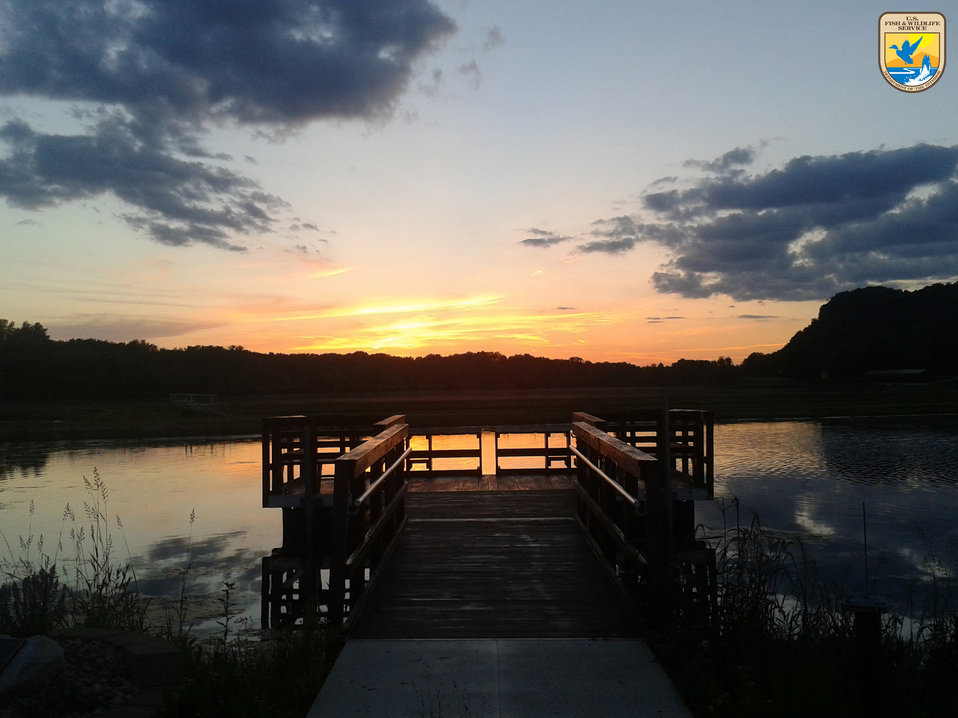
Sunset - Region 3

Sunset at Genoa National Fish Hatchery in WI